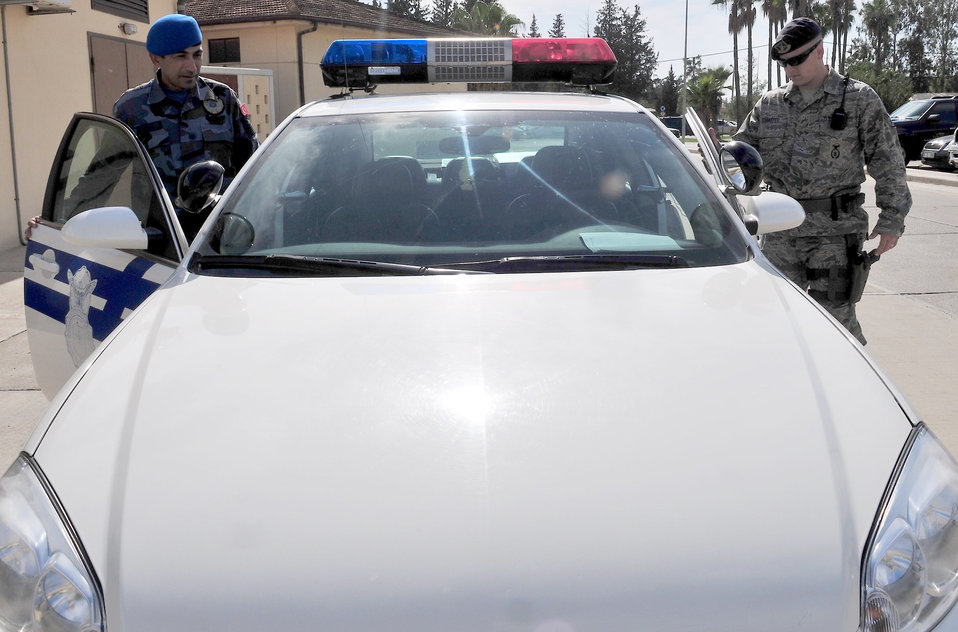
Turkish, American partnership keeps Incirlik AB safe

Staff Sgt. Ryan Schaefer (left), and a Turkish Air Force Security Forces patrolman, ride together during joint patrol Oct. 22, 2010, around Incirlik Air Base, Turkey.